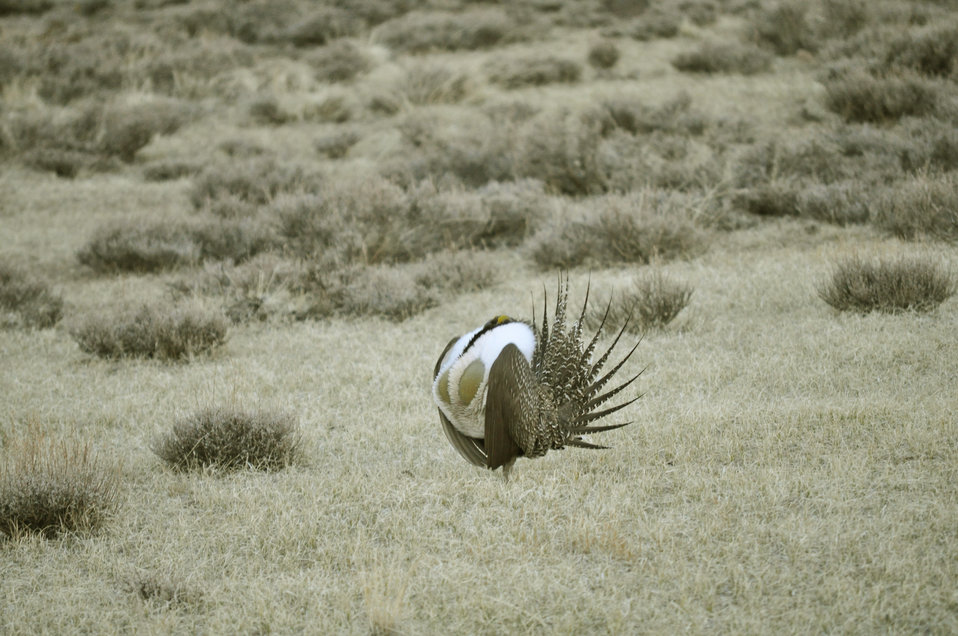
Male greater sage-grouse struts at lek (dancing or mating grounds) to attract females near Bodie, California.